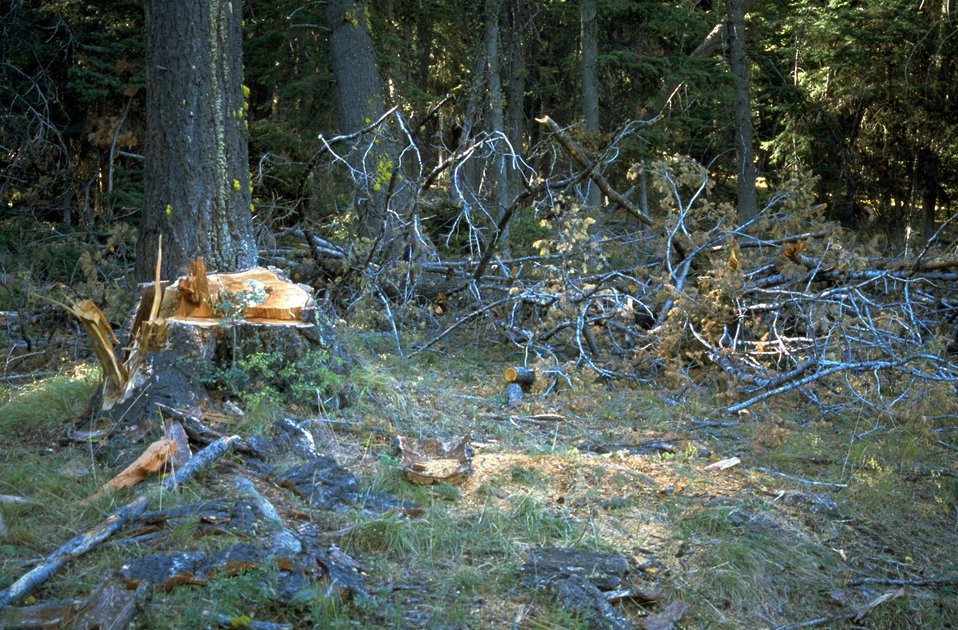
Tree stump and slash in forest setting